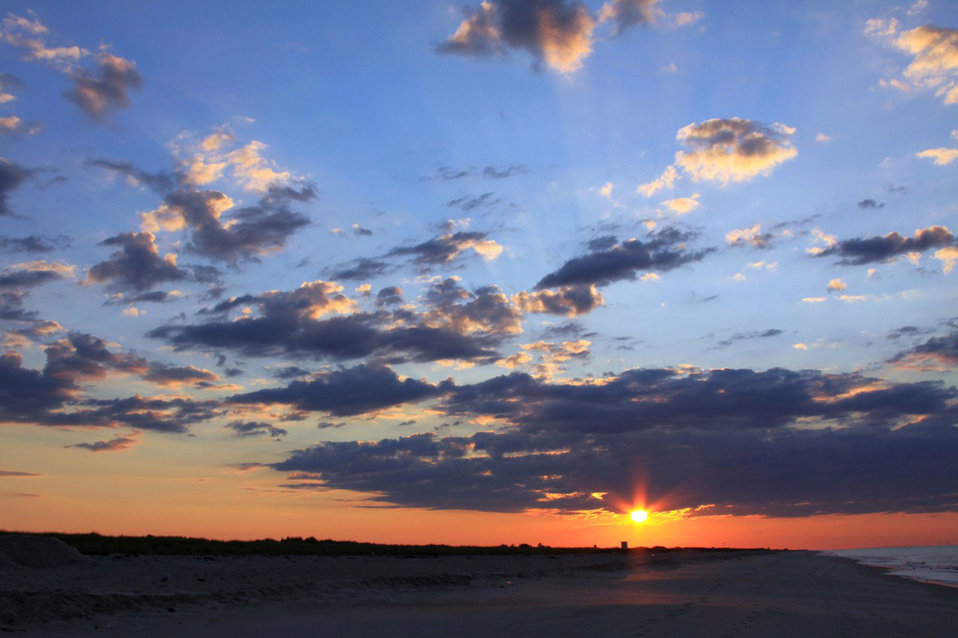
Colorful sunrise

Coloured sky over quiet beach.